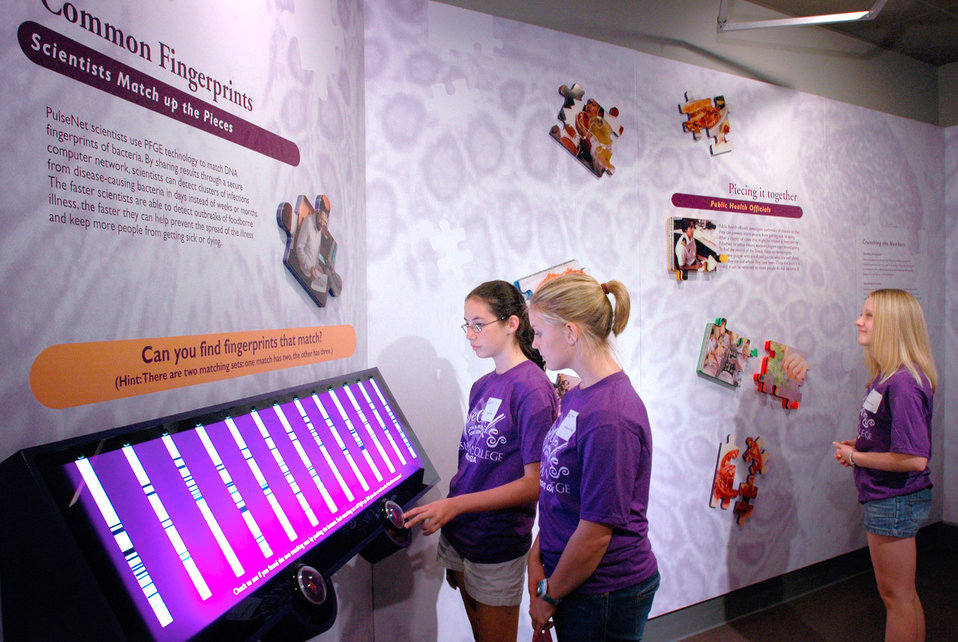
This photograph showed two students from Wesleyan College, located in Macon, Georgia, as they were interacting with the Pulsed Field Gel Electrophoresis (PFGE) technology exhibit located in the Center for Disease Control's (CDC) Global Health Odyssey (GHO) Museum, when the museum was in its former location of the organization's Atlanta, Georgia Roybal Campus, in Building 1. The GHO is still located on the Roybal Campus in Atlanta, Georgia, but is now situated in the new Tom Harkin Global Communications Center. The exhibit area features permanent and changing exhibitions that focus on a variety of public health topics, as well as the history of CDC. The exhibits in the GHO are self-guided and require no advance reservations. Additional curriculum-based exhibits and programming will be added in the future.